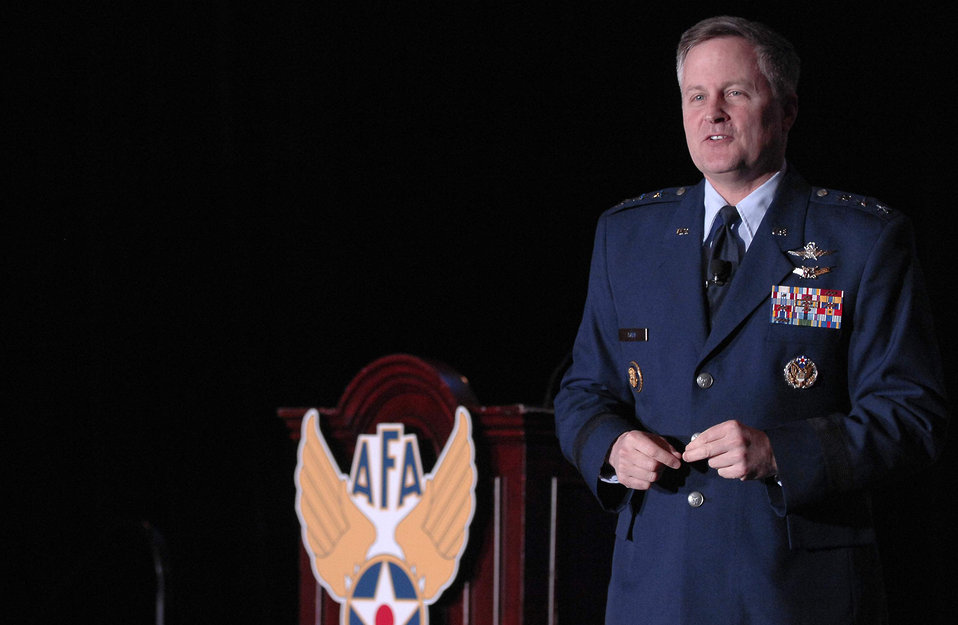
Air Force Chief Information Officer Lt. Gen. William T. Lord addressed modern cyberspace threats and the impact of social networking at the Air Force Association Cyber Futures Symposium and Convention April 1, 2011, in Oxon Hill, Md.